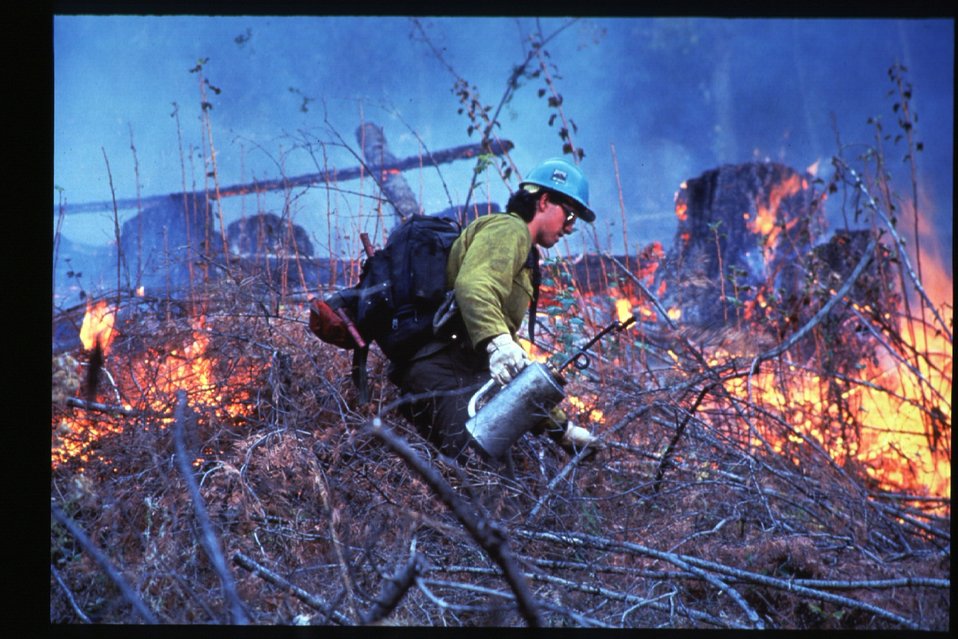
Boise Foothills Fire Danskin Mountains and South Fork of Boise River Wild Fire Fighter Prescribed burn Four River Field Office LSRD Lower Snake River District